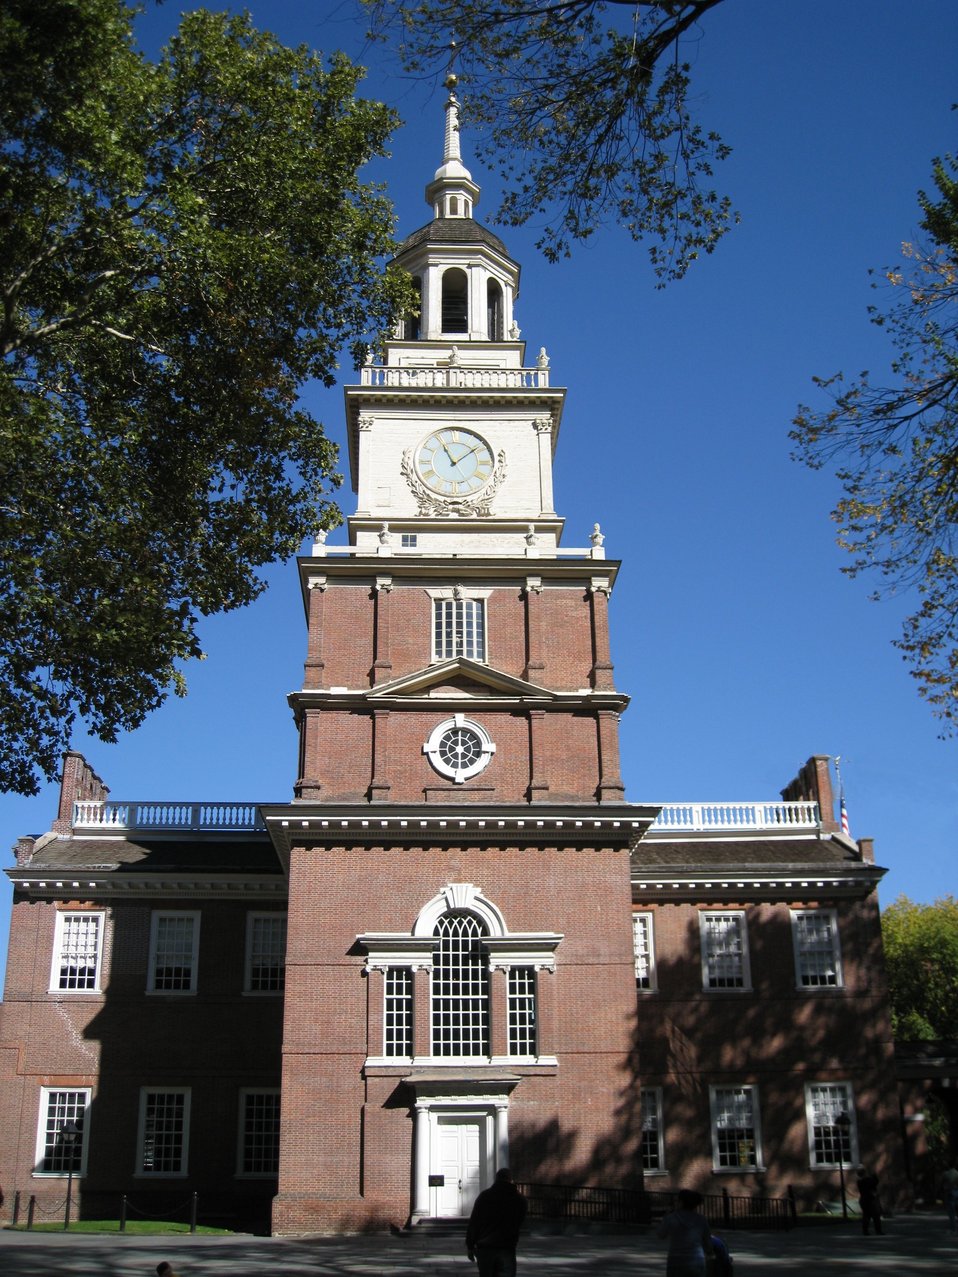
The clocktower at Independence Hall